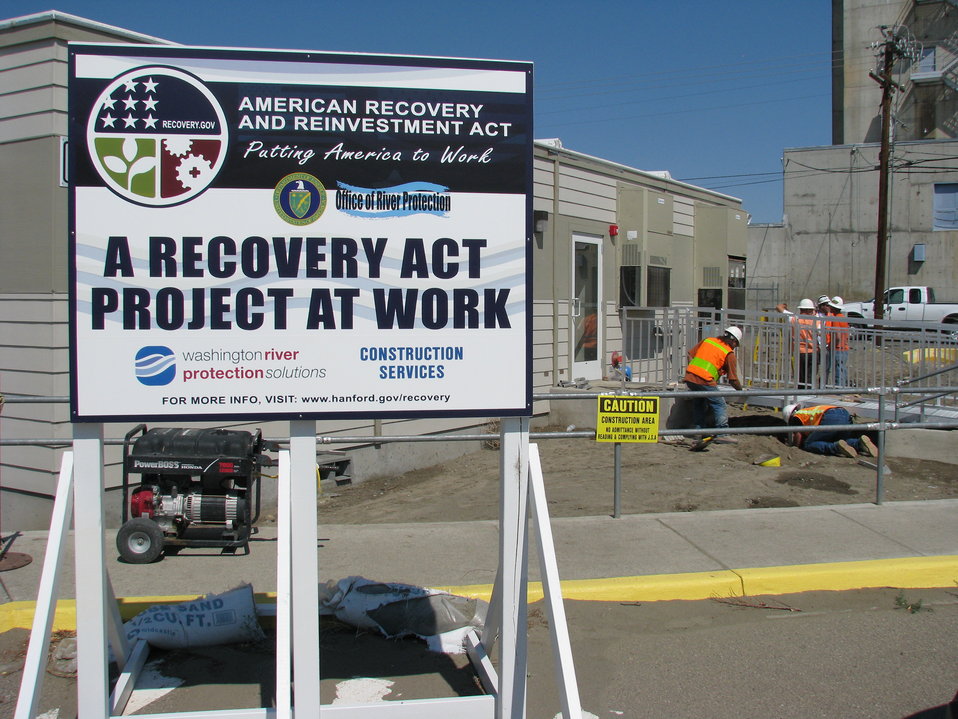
Recovery Act Program Changes the Face of Hanford’s Tank Farms